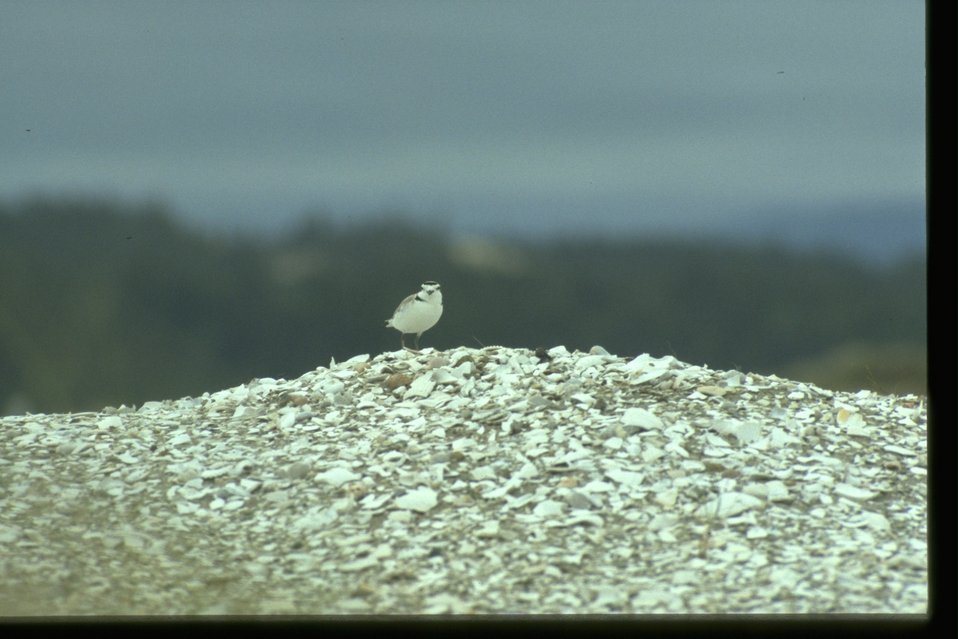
Snowy Plover Habitat at North Spit.